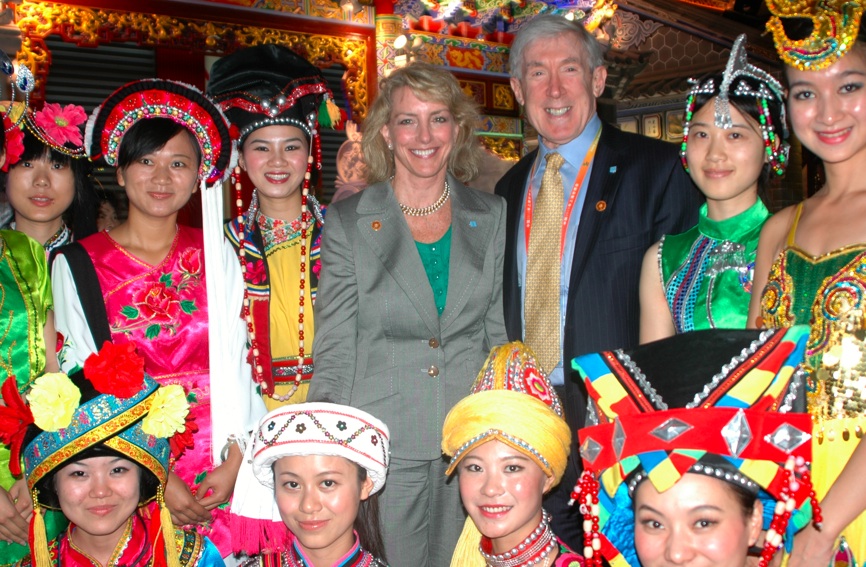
Under Secretary Hormats and Ambassador Bagley Meet With Chinese Women

Under Secretary of State for Economic, Energy and Agricultural Affairs Robert Hormats and Special Representative for Global Partnerships Elizabeth Frawley Bagley meet Chinese women dressed in traditional costumes in Shanghai, China, May 22, 2010.